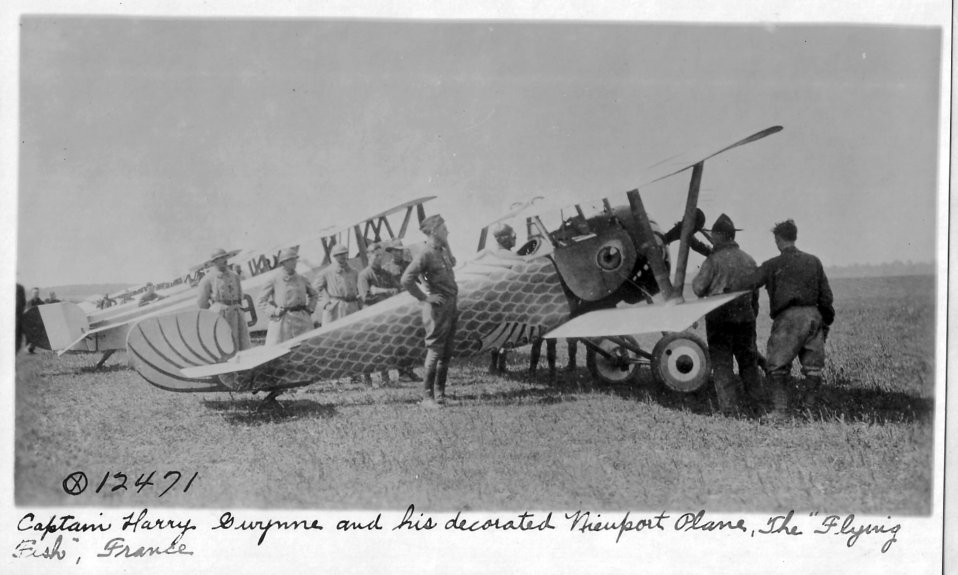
The Flying Fish

EARLY YEARS -- Captain Harry Gwynne and his decorated Nieuport Plane,